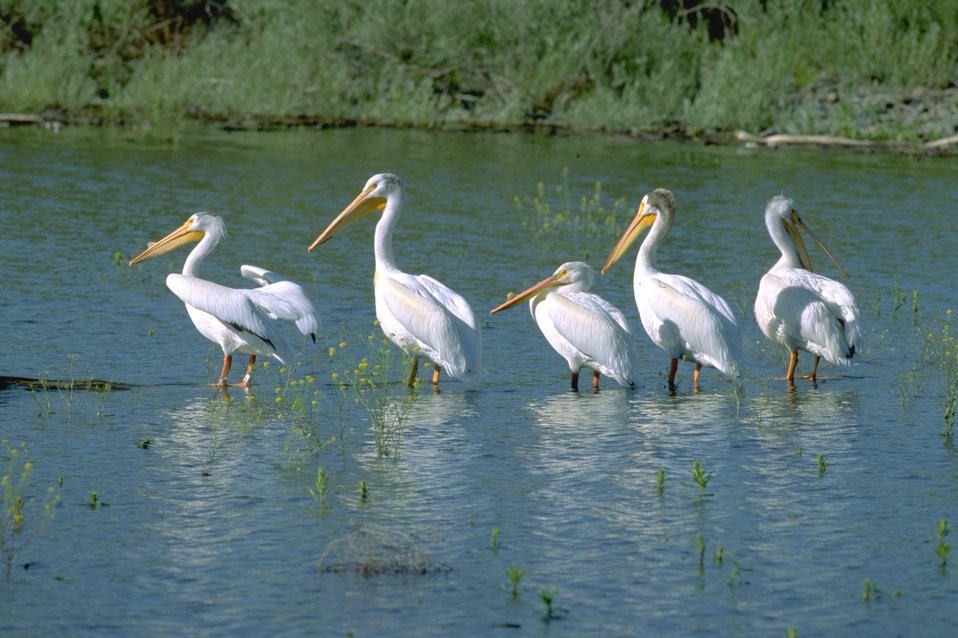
Pelicans on river at Decision Point